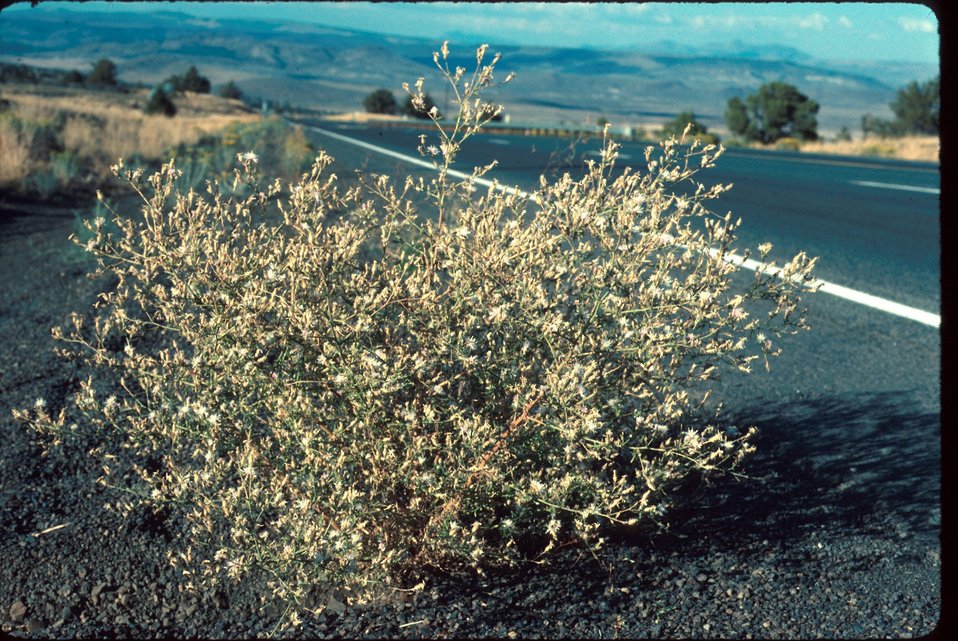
Diffuse Knapweed noxious weed Wildflower